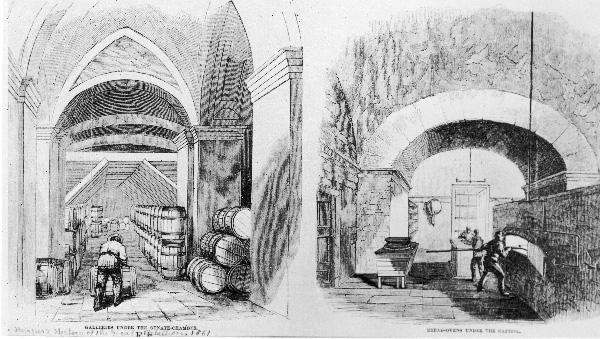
Capitol Subbasement 1861

From Harpers Weekly 1861, view of the Capitol Subbasement and its use as bakery.